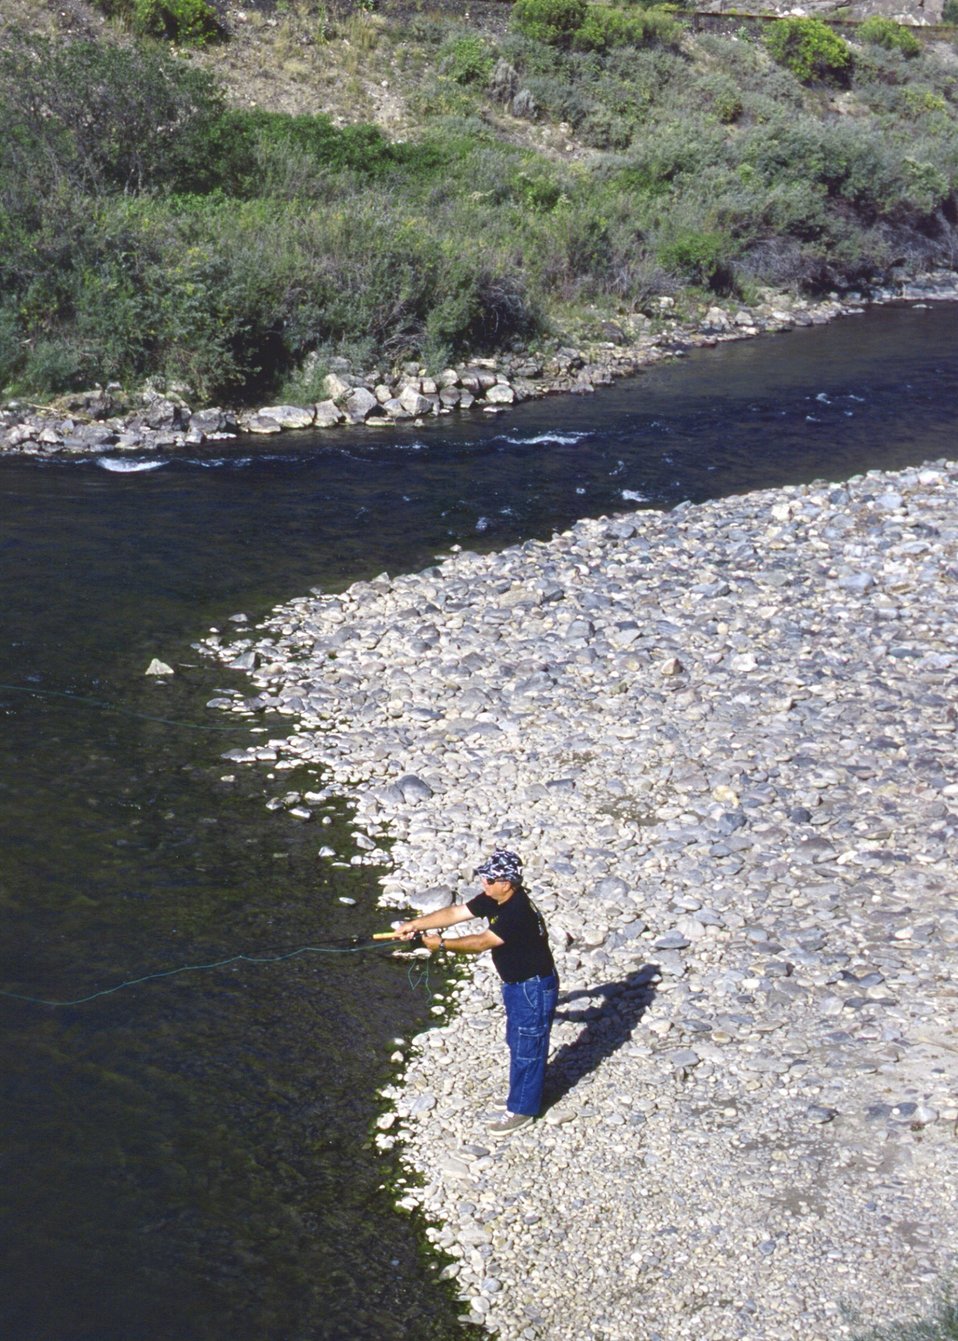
A Man Fishing